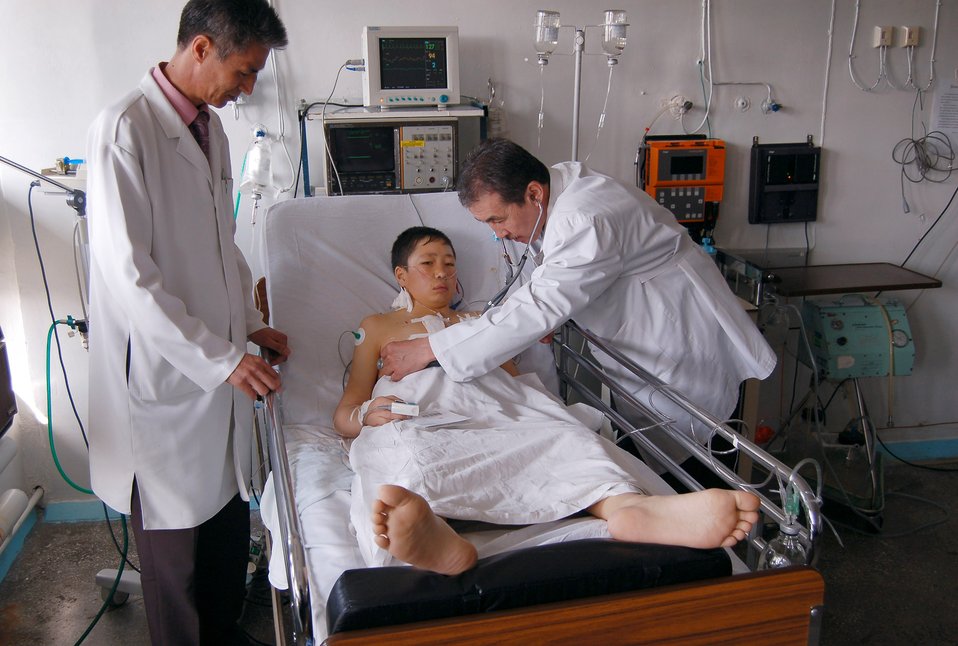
Manas Airmen help Children's Heart Ward

Dr. Samudin Shabyralie and Dr. Kaldarbek Abdramanov check on the Manas Air Base Outreach Society-sponsored 100th heart surgery patient, Alymbekov Amanbek, March 29 in the Children's Heart Ward in Manas, Kyrgyzstan. Dr. Shabyralie is the heart surgeon in the local Institute of Cardiac Surgery and Organ Transplantation, and Dr. Abdramanov is the director and professor of surgery.